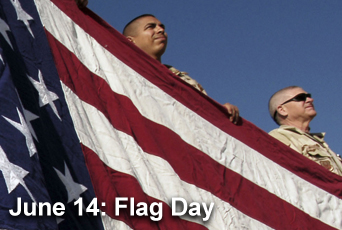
Flag Day - June 14, 2007

On this day back in 1777, the United States flag was adopted by the Second Continental Congress. Inspired by decades of state and local celebrations, Flag Day, the anniversary of the Flag Resolution of 1777, was officially established by the proclamation by President Woodrow Wilson on May 30, 1916. While Flag Day was celebrated in various communities for years after Wilson's proclamation, it was not until Aug. 3, 1949, that President Truman signed an Act of Congress designating June 14 as National Flag Day.